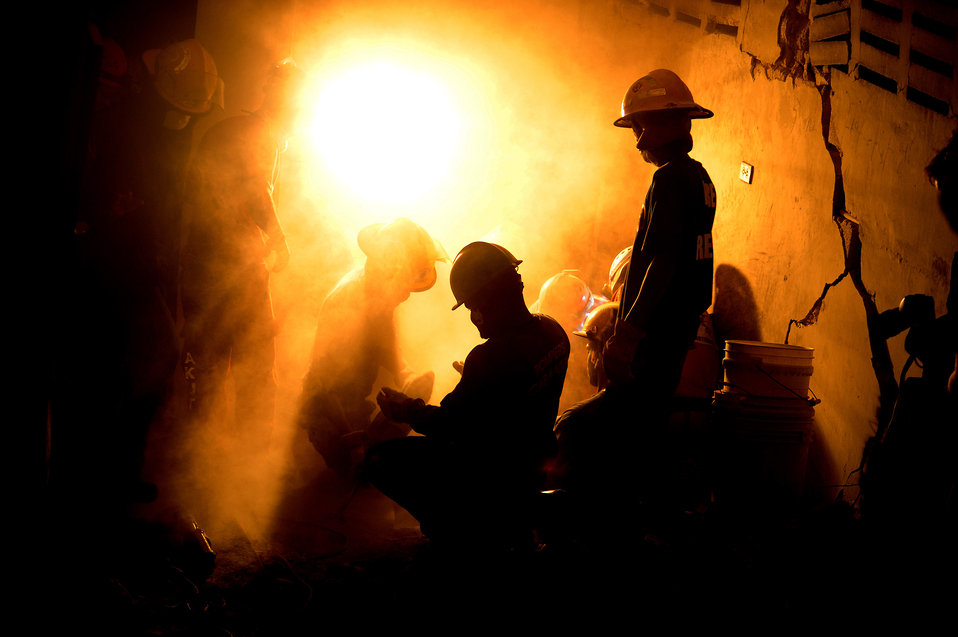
A glimmer of hope

Members of various rescue teams work Jan. 19, 2010, to free a 25-year-old woman who had been trapped in a collapsed building for seven days in Port-au-Prince, Haiti.